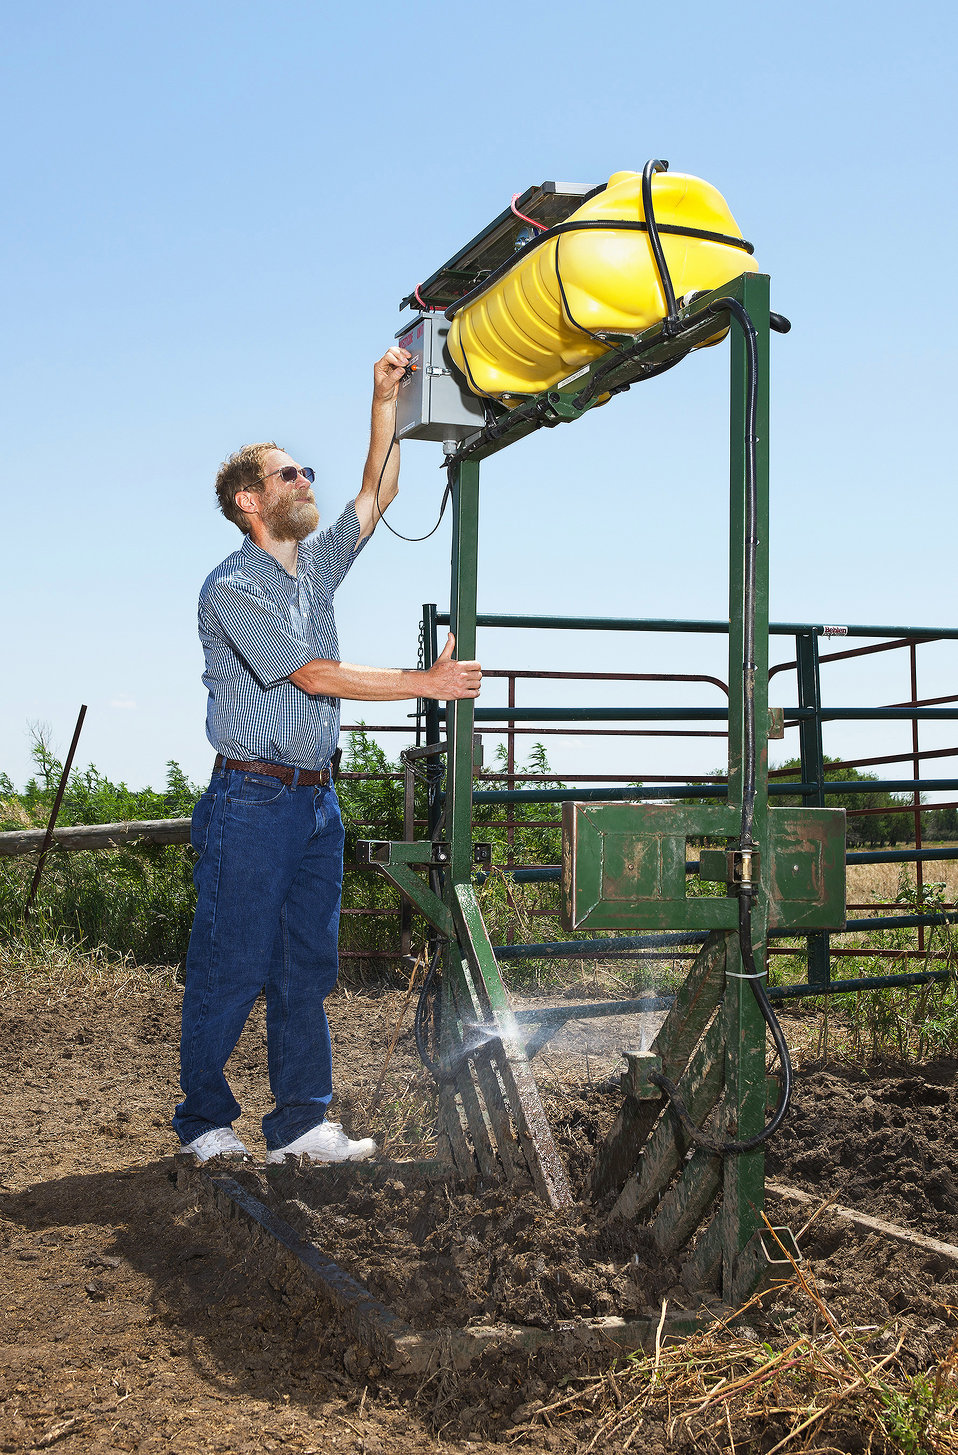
U.S. Department of Agriculture (USDA) Agriculture Research Service (ARS) entomologist David Taylor adjusts the settings on a sprayer used to automatically treat cattle with a stable fly repellent in Lincoln, NE on Oct. 31, 2003.